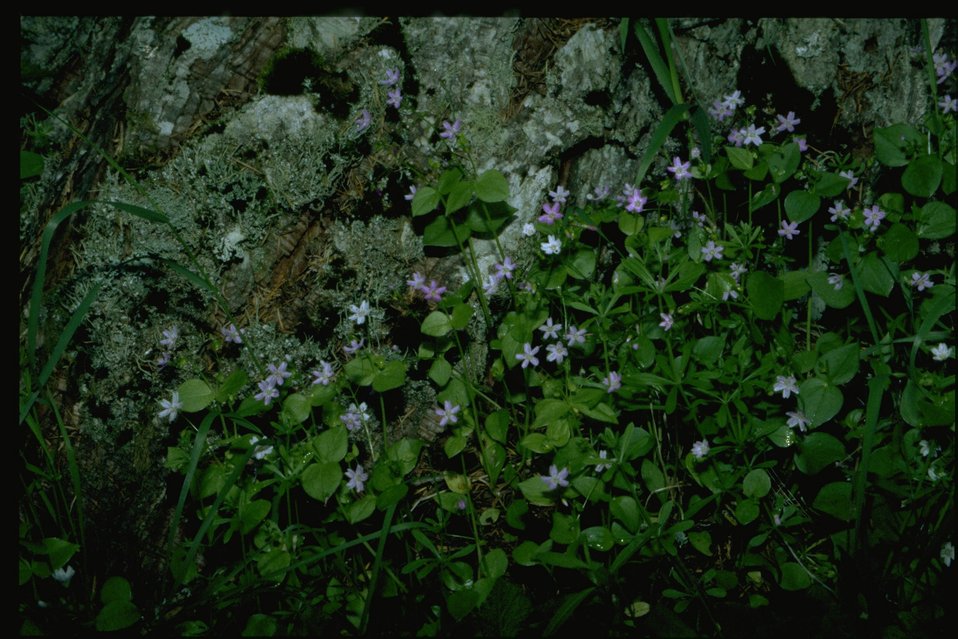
Farshot of Claytonia sibirica.